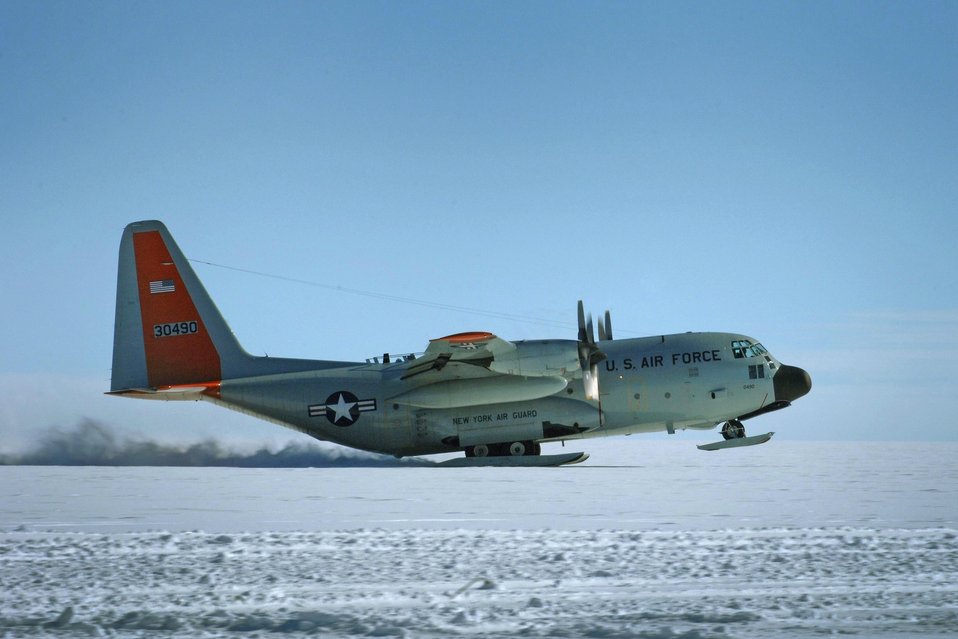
Polar mission

The crew of a ski-equipped LC-130 Hercules from the New York National Guard's 109th Airlift Wing takes off July 28, 2010, from a remote science research site on Greenland's ice sheet. The 109th Airlift Wing is the only military unit in the world to fly such aircraft and has flown missions to Greenland since 1975. The unit now provides airlift support to the National Science Foundation's polar research program there.